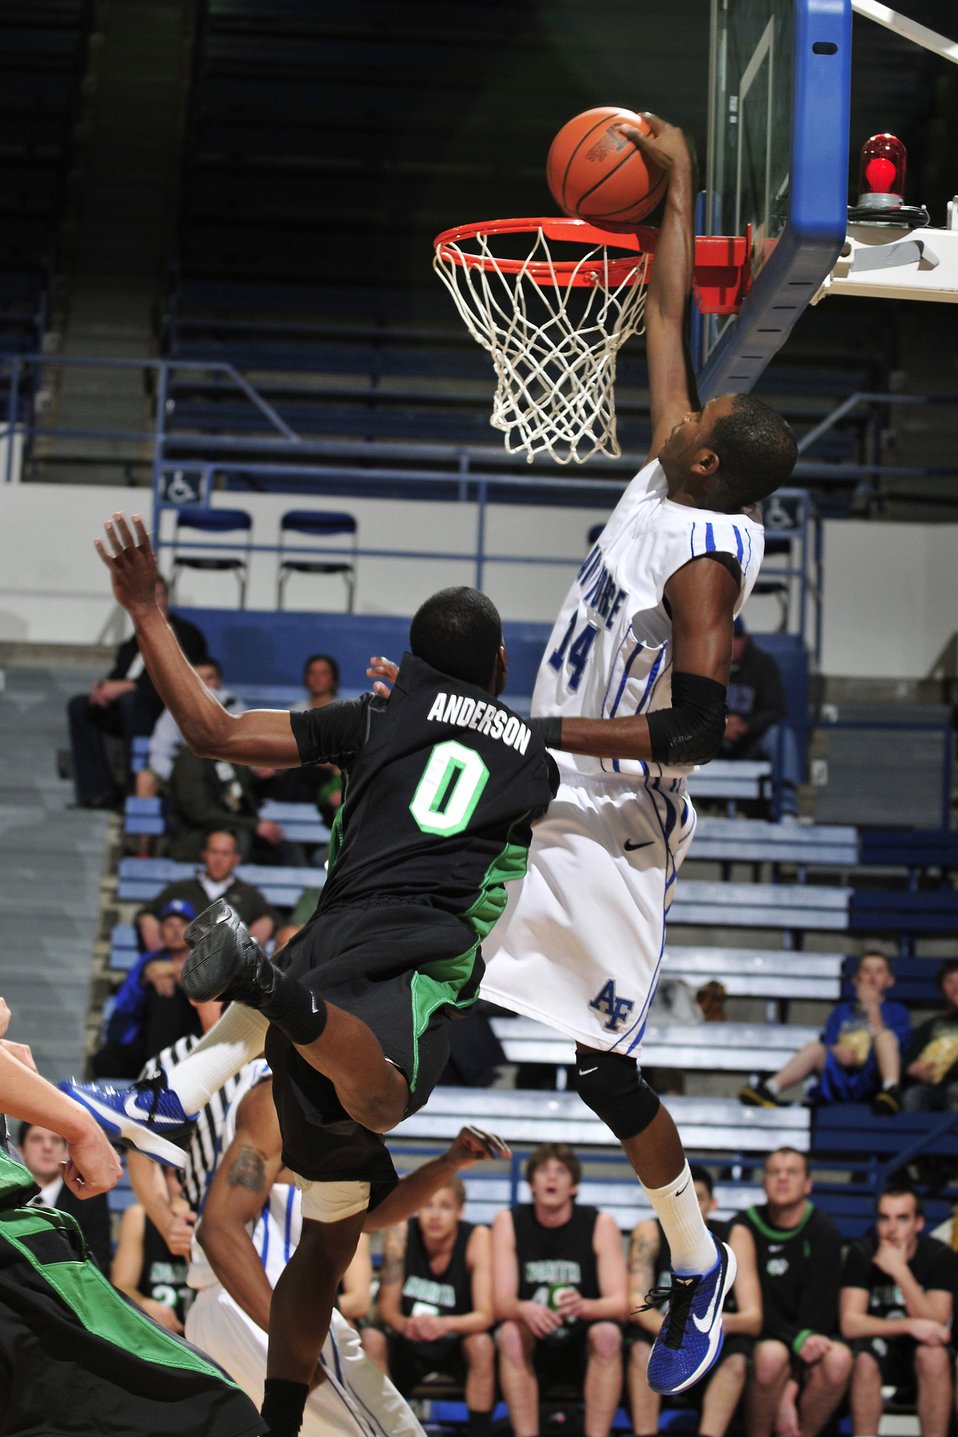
He scores!

Sophomore Falcons' guard Michael Lyons slam dunks over North Dakota's Aaron Anderson during the opening round of the CollegeInsider.com postseason tournament March 15, 2011, at the Air Force Academy's Clune Arena.